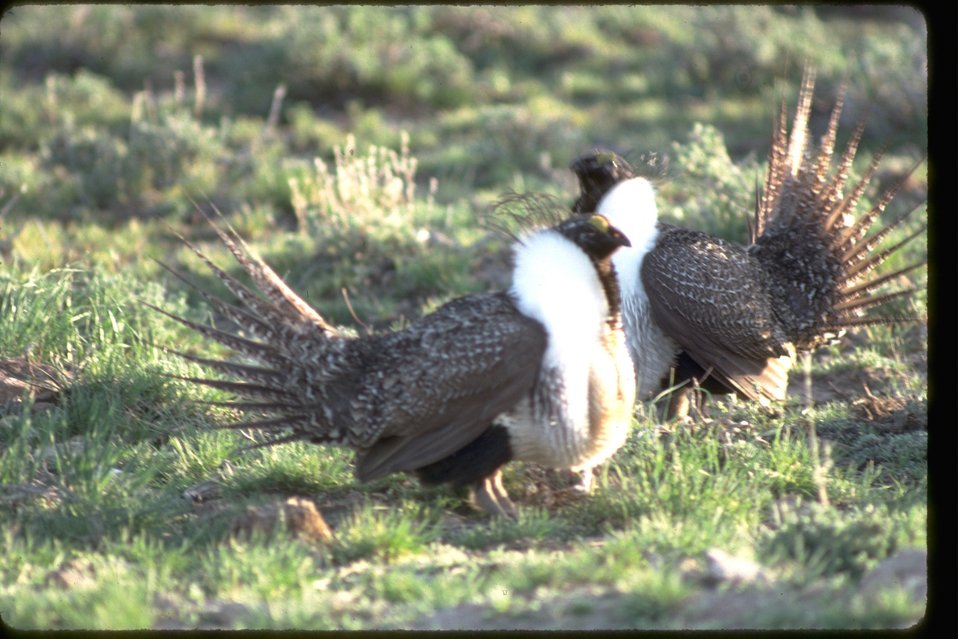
Sage Grouse on strutting ground (lek) at Jackass Butte near Burns, Oregon.